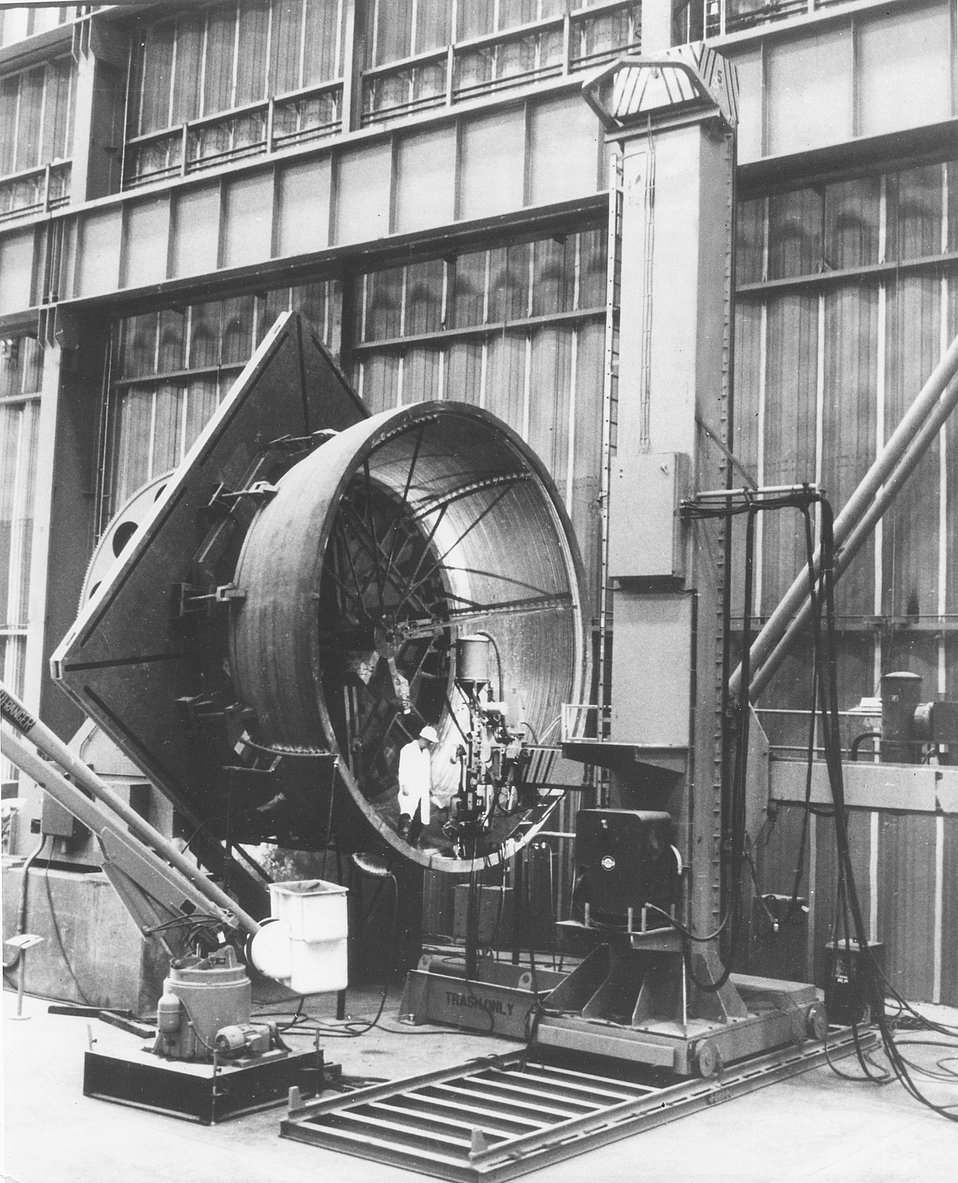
Indicative of private industry's growing participation in the atomic energy field is the new $20 million Babcock and Wilcox Company plant at Mt. Vernon, Indiana--the world's most advanced facility for fabrication of nuclear reactor pressure vessels. Circa 1967.